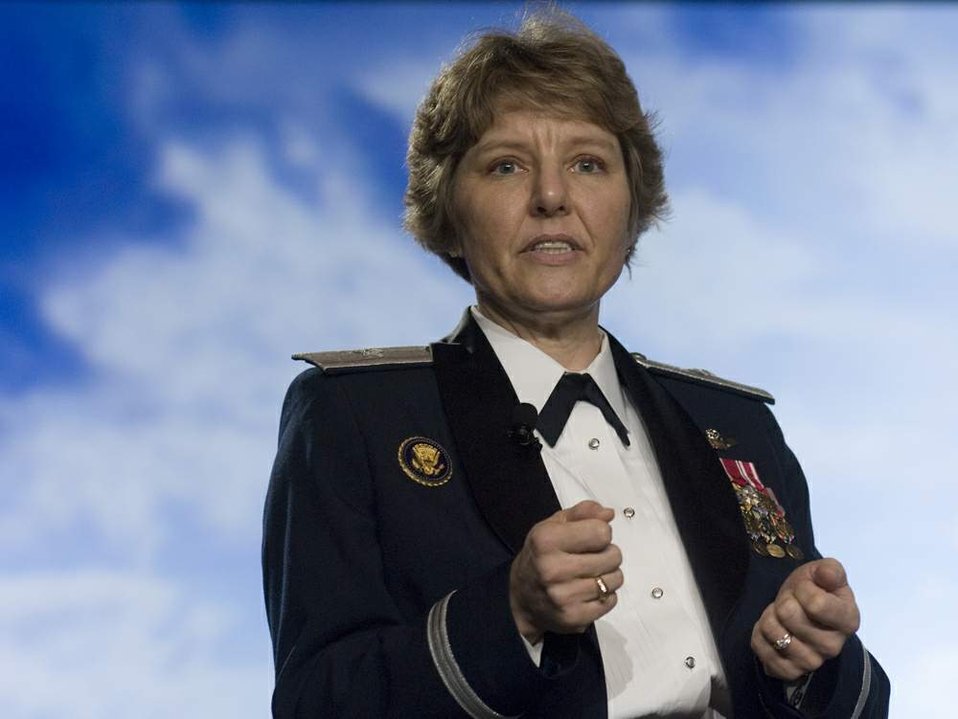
General participates in NCAA Women's Final Four

Brig. Gen. Michele D. Johnson addresses participants of 2008 Women's Final Four Salute dinner as guest speaker April 4 in Tampa, Fla. General Johnson is the most decorated female athlete in U.S. Air Force Academy history. She was selected by the NCAA to speak to women athletes and participate at numerous NCAA events before the 2008 NCAA Women's Final Four basketball tournament. General Johnson is the deputy director on the war on terrorism, Strategic Plans and Policy Directorate on the Joint Staff at the Pentagon.